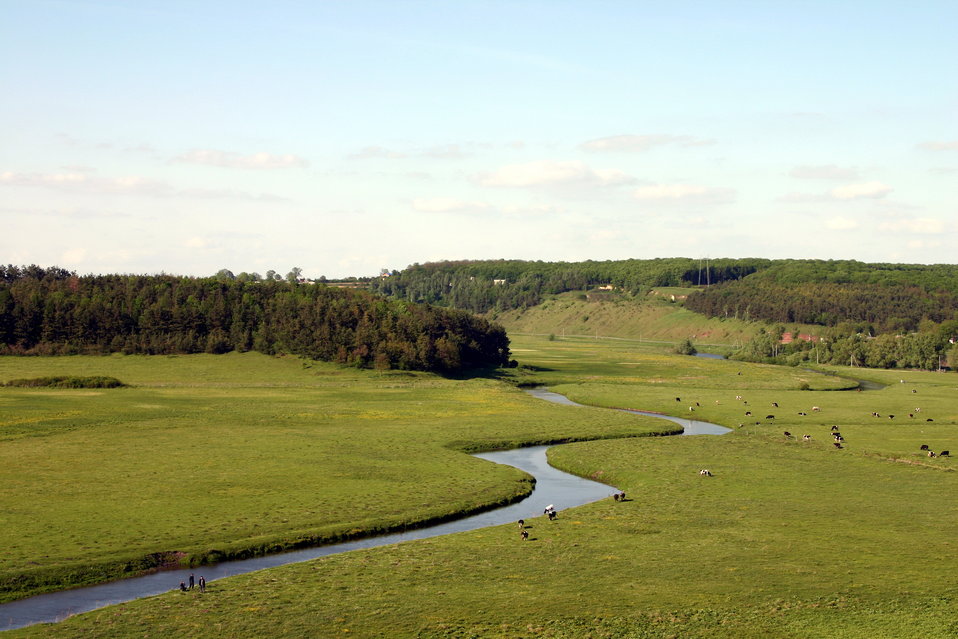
Українська: R. Gnizna in Bavoriv.jpg: р. Гнізна поблизу с. Баворів